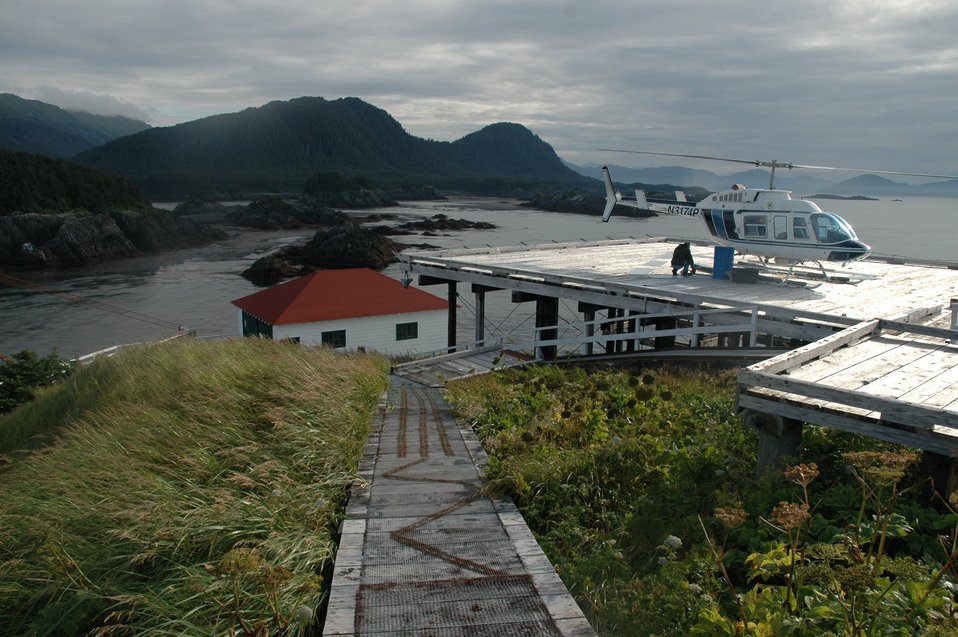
Looking to the east from Cape Spencer Lighthouse - northern entrance to the Inside Passage from the Gulf of Alaska.